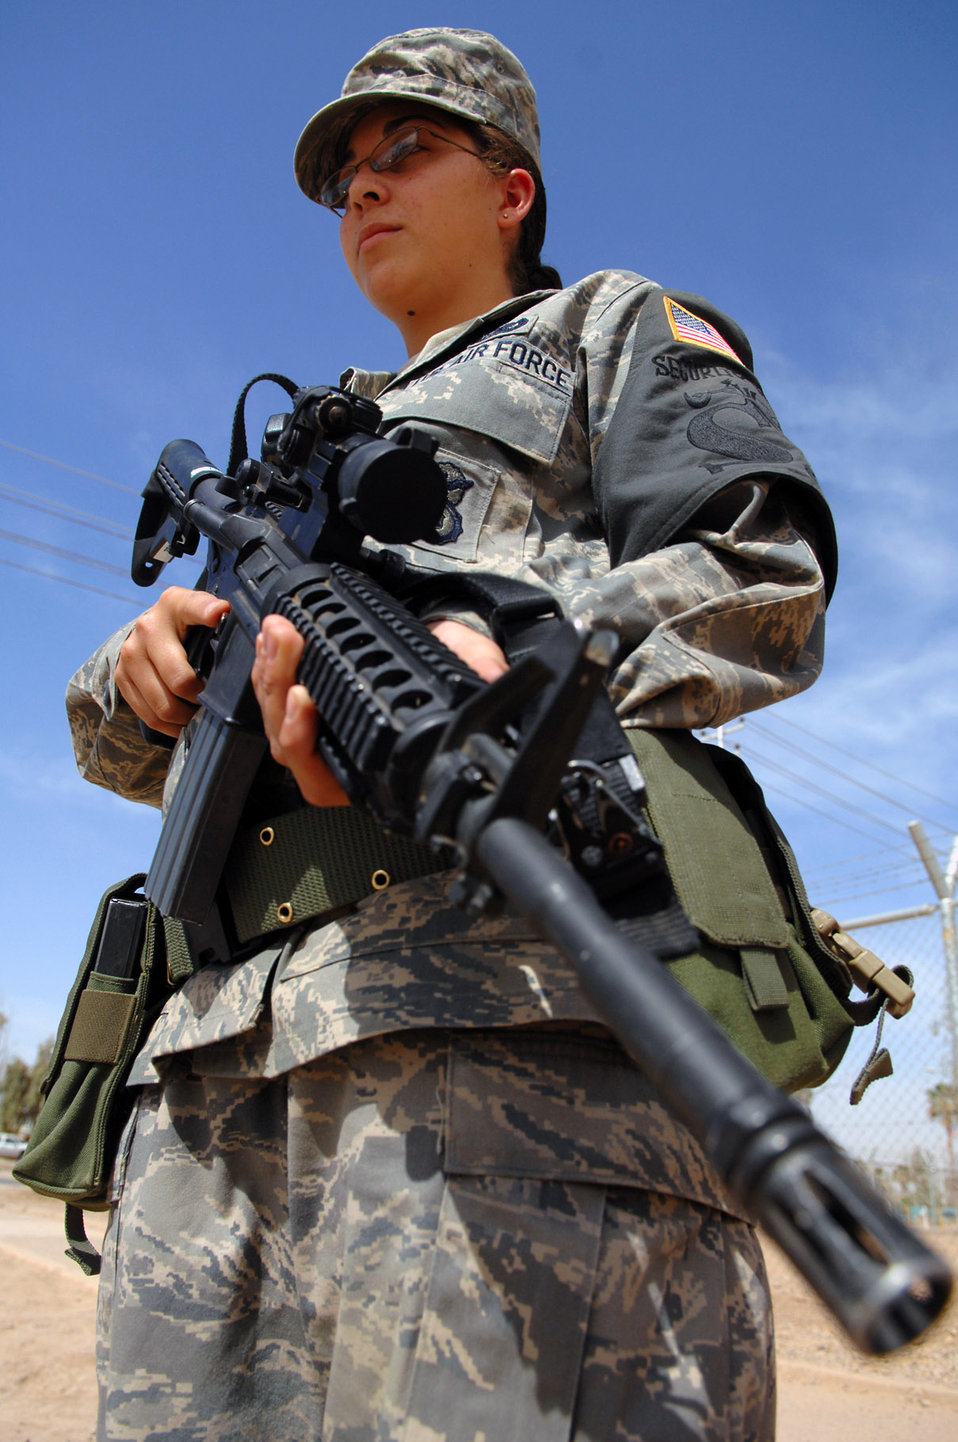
A watchful eye

Airman 1st Class Tasha Gonzalez stands alert April 18 at an entry control point at Balad Air Base, Iraq. Constant vigilance ensures security of airpower assets and personnel. Airman Gonzalez is deployed from Luke Air Force Base, Ariz.